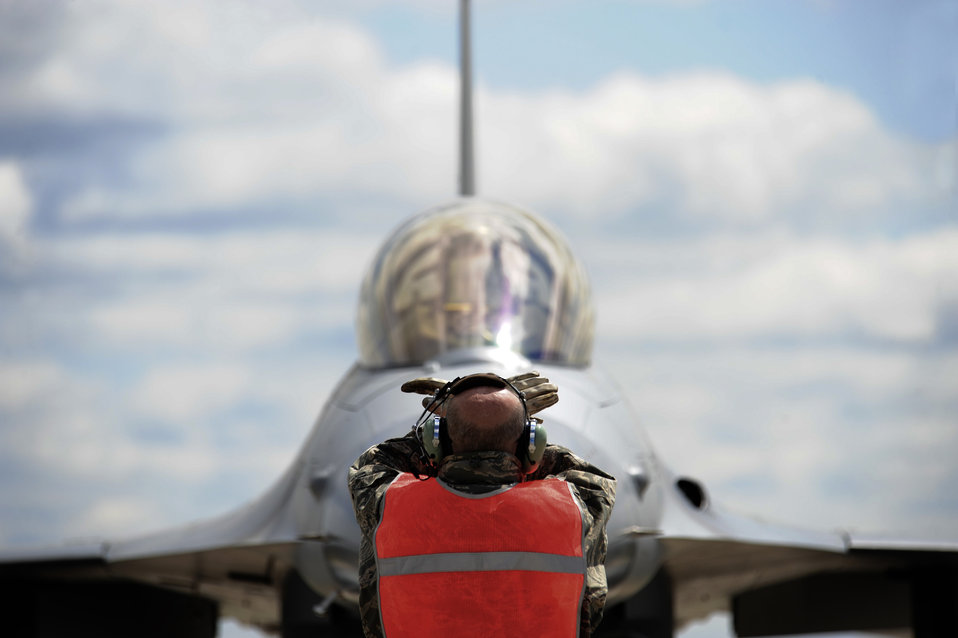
Close enough

Master Sgt. Jeff Knoll, an F-16 Fighting Falcon crew chief assigned to the South Dakota Air National Guard's 114th Fighter Wing in Sioux Falls, marshals an F-16 Fighting Falcon June 4 during Exercise Maple Flag 42 at Cold Lake, Canada.